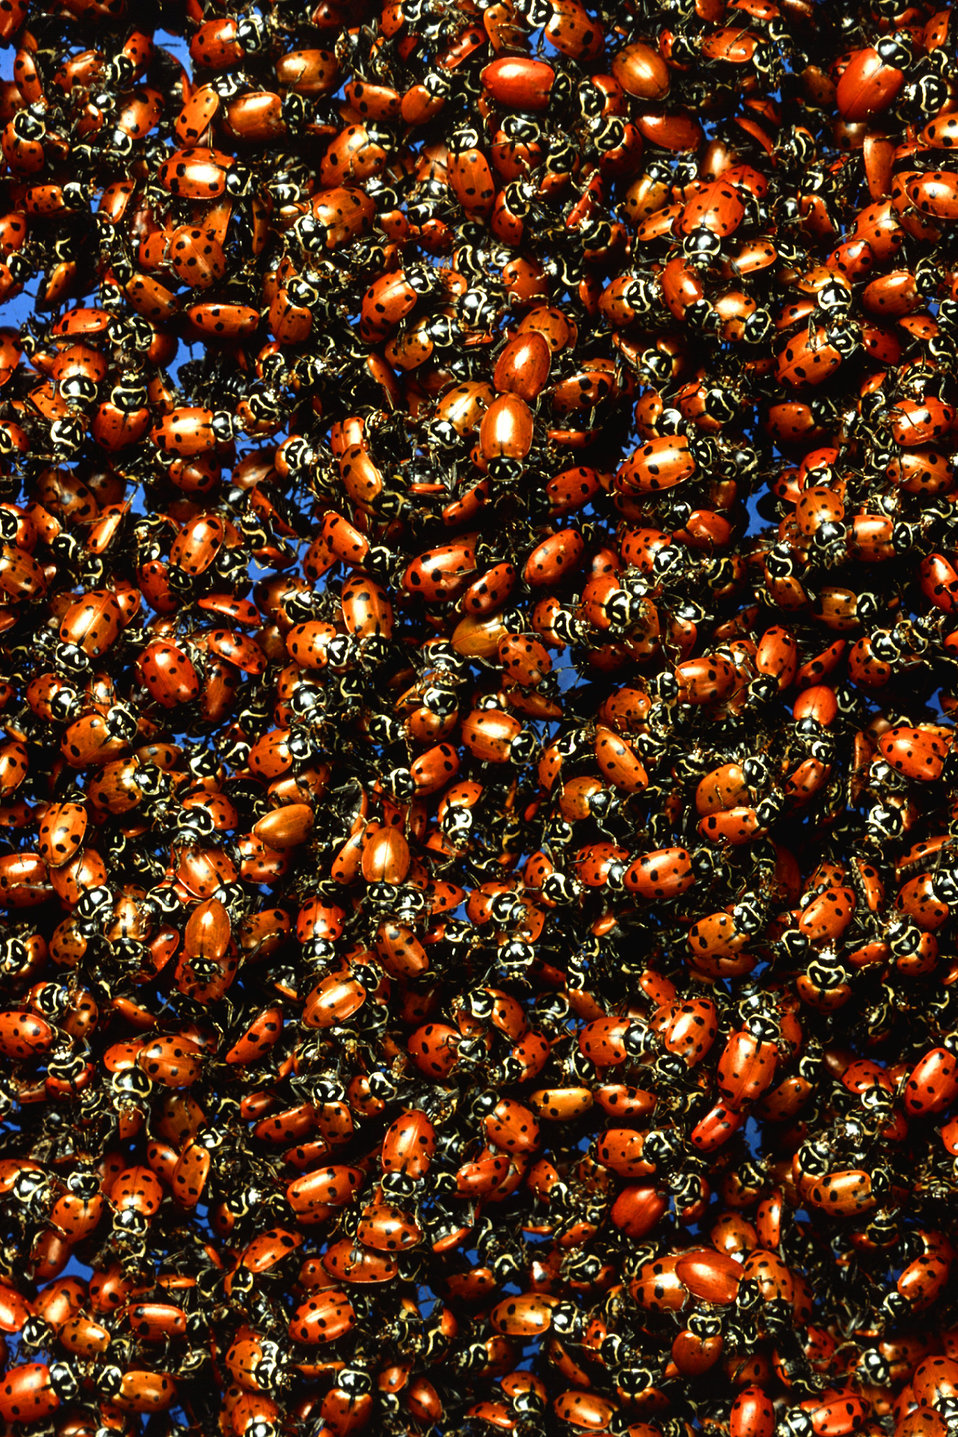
Convergent lady beetles (Hippodamia convergens) are imported for study at the U.S. Department of Agriculture (USDA) Agricultural Research Service (ARS) Beneficial Insects Introduction Research Laboratory in Newark, DE.